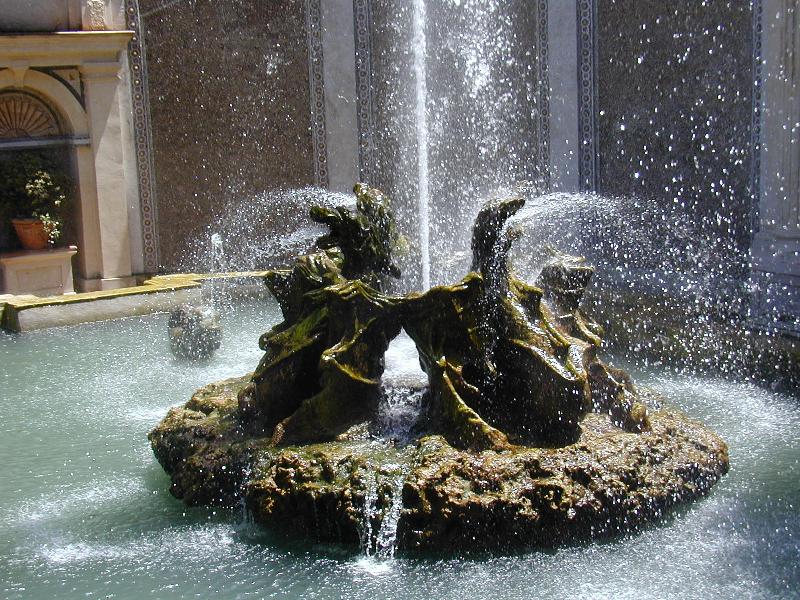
Italiano: Tivoli, Villa d'Este - Fontana dei draghi